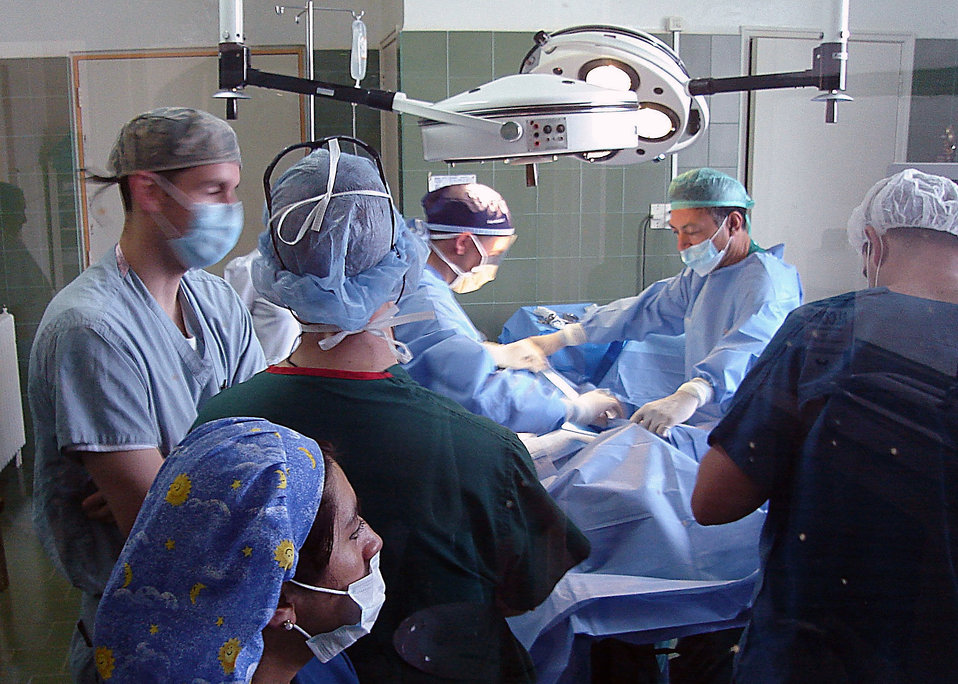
Med team trains with Chilean air force medics

Capt. (Dr.) Dale Capener (left) administers anesthesia to a patient for a urologic procedure in the Chile Chico Hospital in the Patagonia region of Chile March 24. Captain Capener is a Wilford Hall Medical Center anesthesiologist and part of a team of 11 Air Force medics who participated in a medical readiness training exercise with the Chilean air force in March.